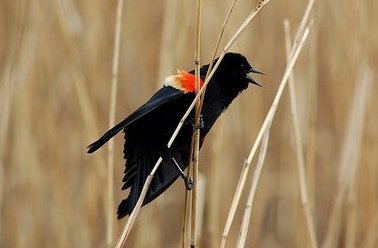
Red Winged Blackbird